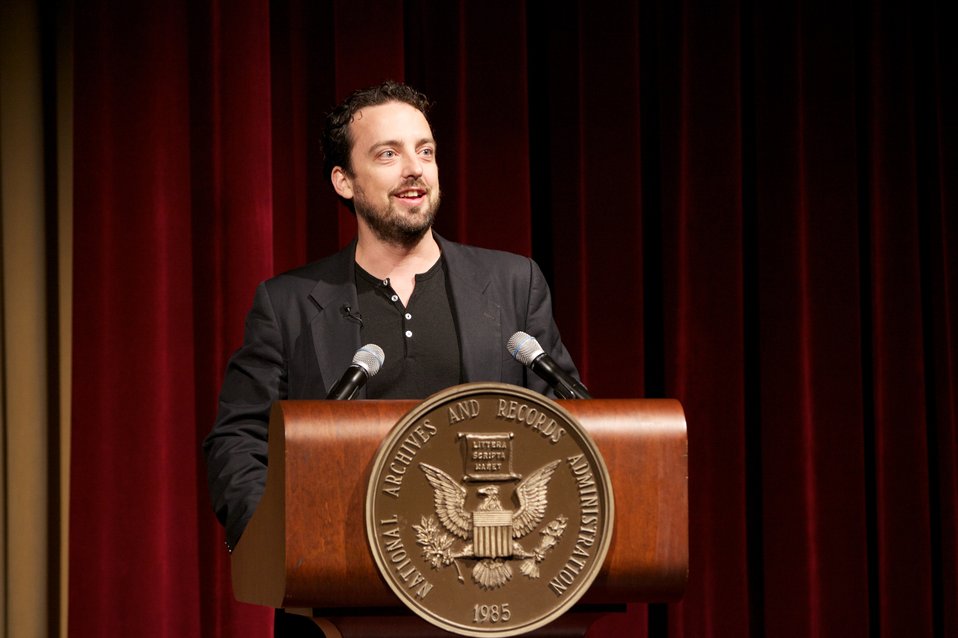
The Gettysburg Story and The Wheatfiled

The Gettysburg Story and The Wheatfield; Jake Boritt, filmmaker, introduces his film The Gettysburg Story